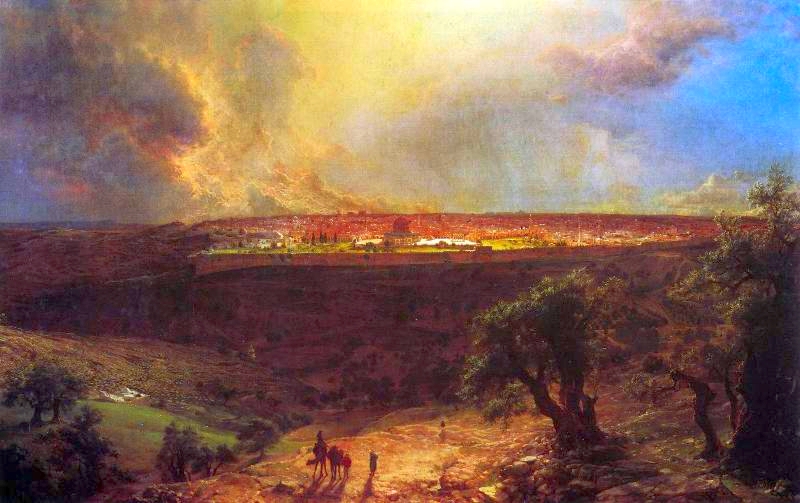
Espa√±ol: 'Jerusalen desde el Monte de los Olivos', 1870 de Frederick Edwin Church (1826-1900)